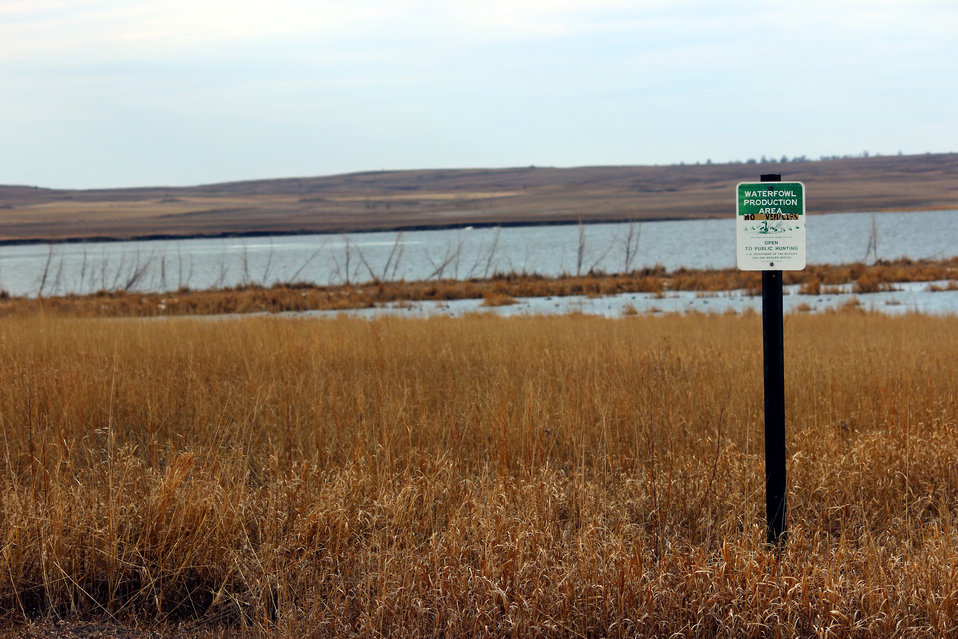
Bender WPA

The Bender Waterfowl Production Area is located in McIntosh County, North Dakota. The main wetland on this WPA attracts a variety of grebes, ducks, geese, shorebirds, terns, pelicans, and herons. It was also a popular, but short-lived spot for ice fishing this past winter.